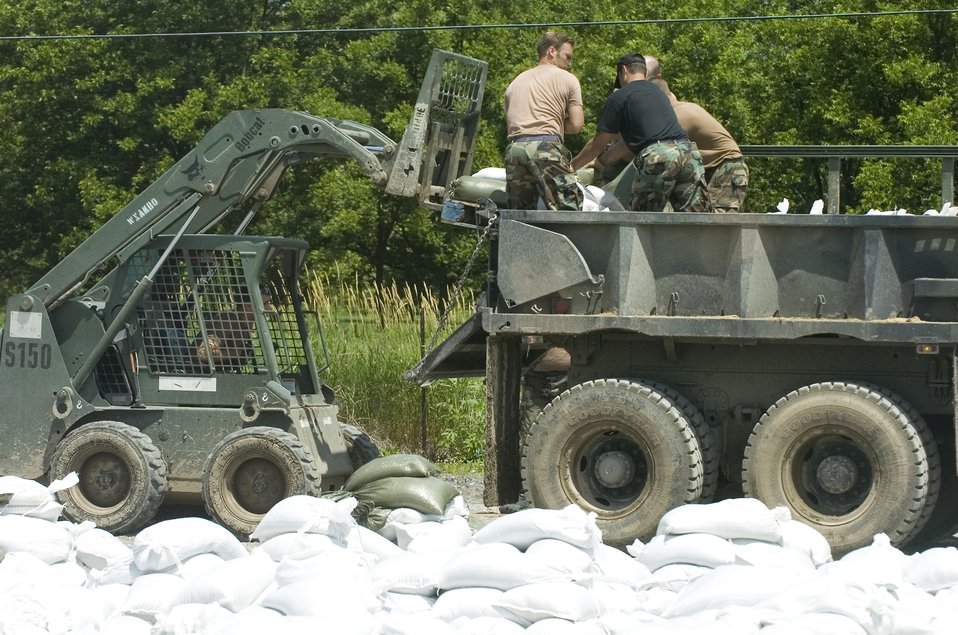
Missouri Air National Guard protects Winfield levee

Missouri Air National Guardsmen unload a pallet of sandbags June 20 that will be used to prevent erosion of a levee near Winfield, Mo. The Airmen are assigned to 131st Fighter Wing in St. Louis.